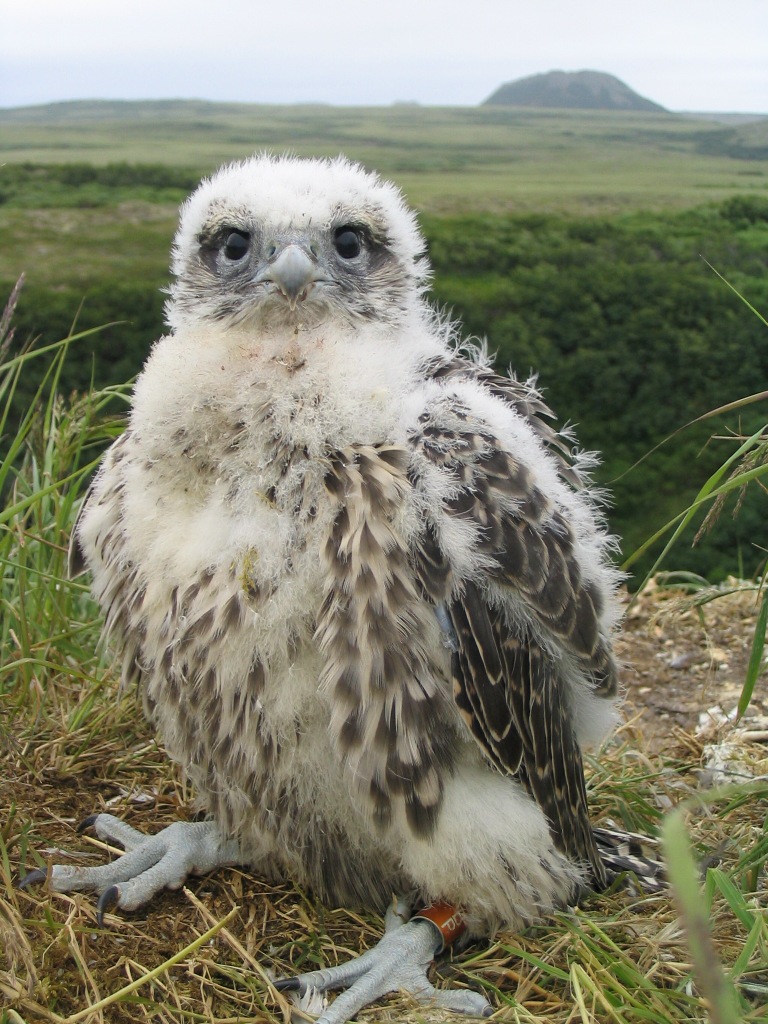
Gyrfalcon Nestling

USFWS Yukon Delta NWR